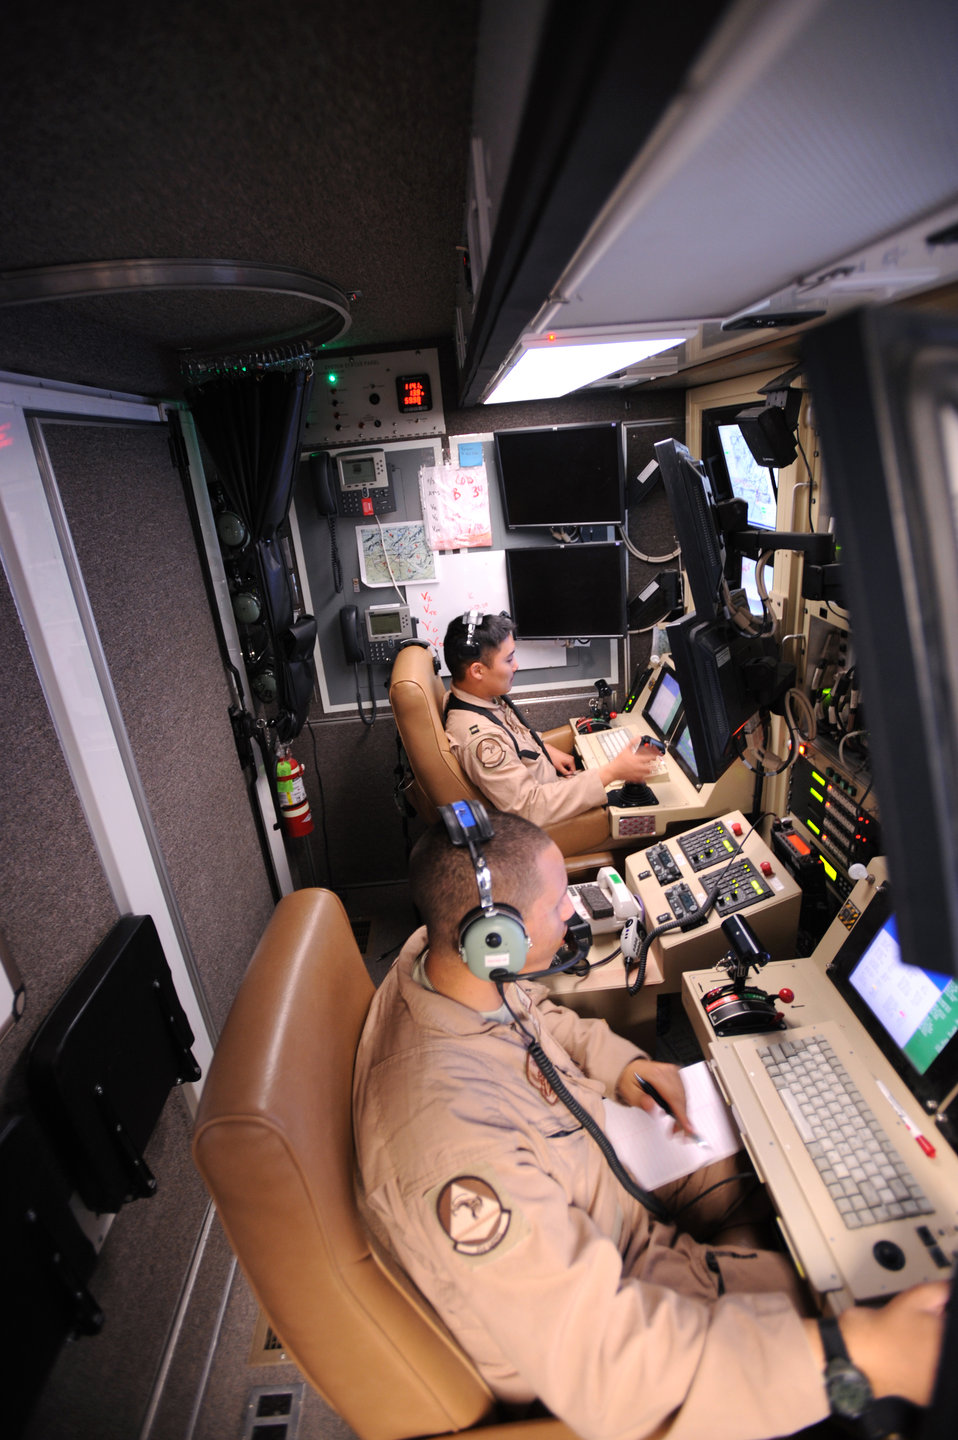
UAs not drones

Capt. Ryan Jodoi (rear) flies an MQ-9 Reaper while Airman 1st Class Patrick Snyder controls a full motion video camera March 13 at Kandahar Air Base, Afghanistan.